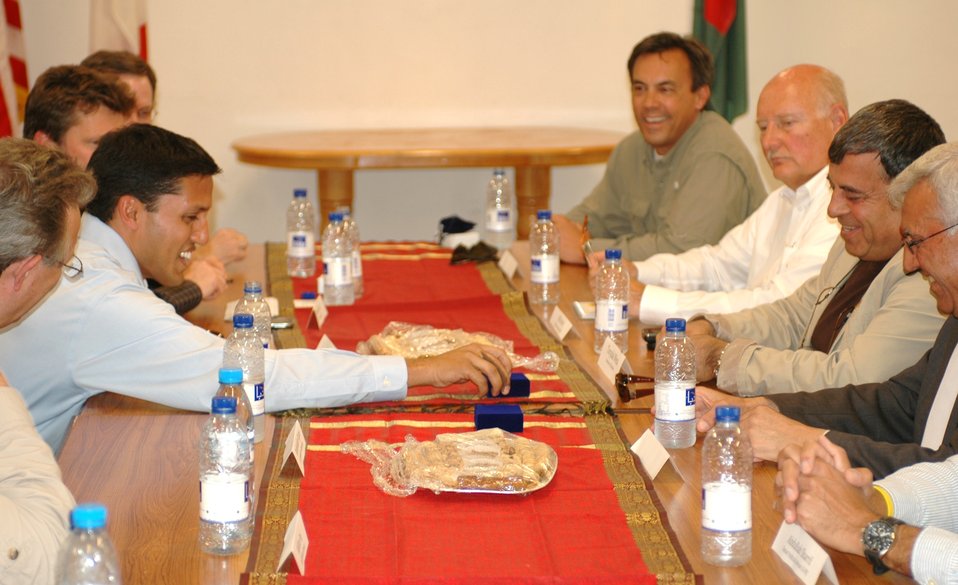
Dr Shah Visits Kandahar April 9, 2010